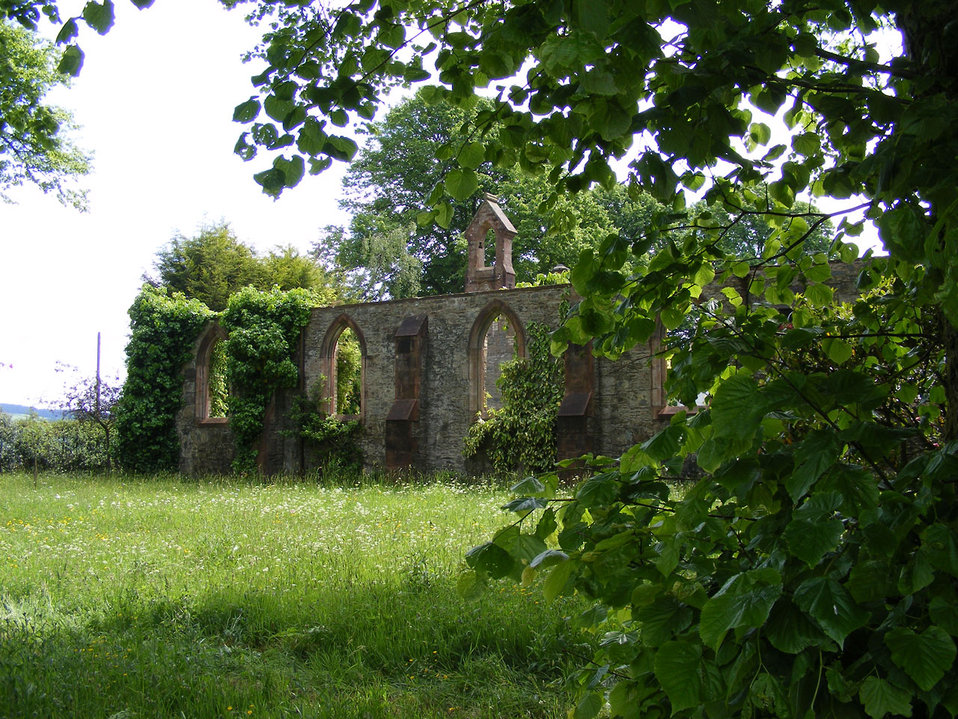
Derelict ruin

The front aspect of a derelict ruin.